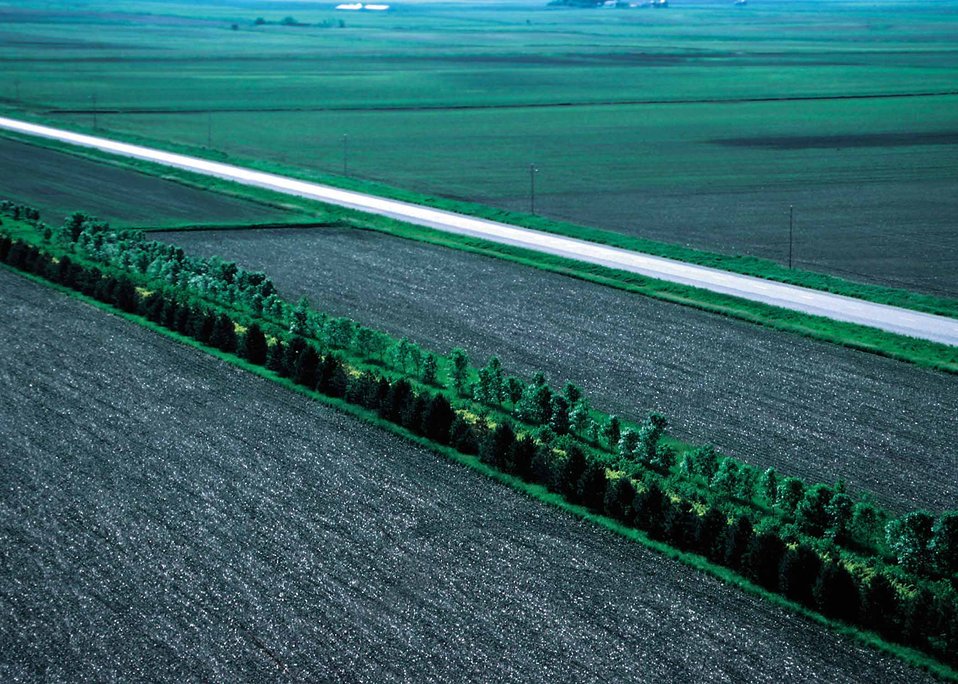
This 'living snowfence' of trees and shrubs in north-central Iowa provides protection for the highway from snow drifts in winter, and also adds diversity to the landscape and habitat for wildlife.